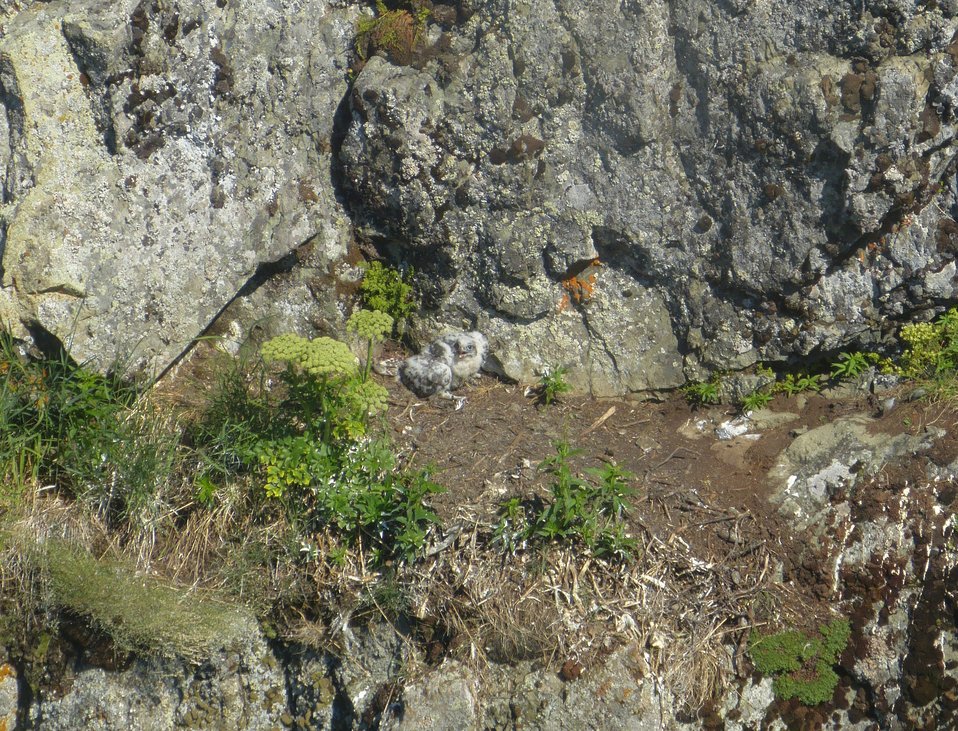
Gyrfalcon nest, Kilbuck Mountains, Yukon Delta National Wildlife Refuge

Photo by: Kristine Sowl,
USFWS, Yukon Delta NWR